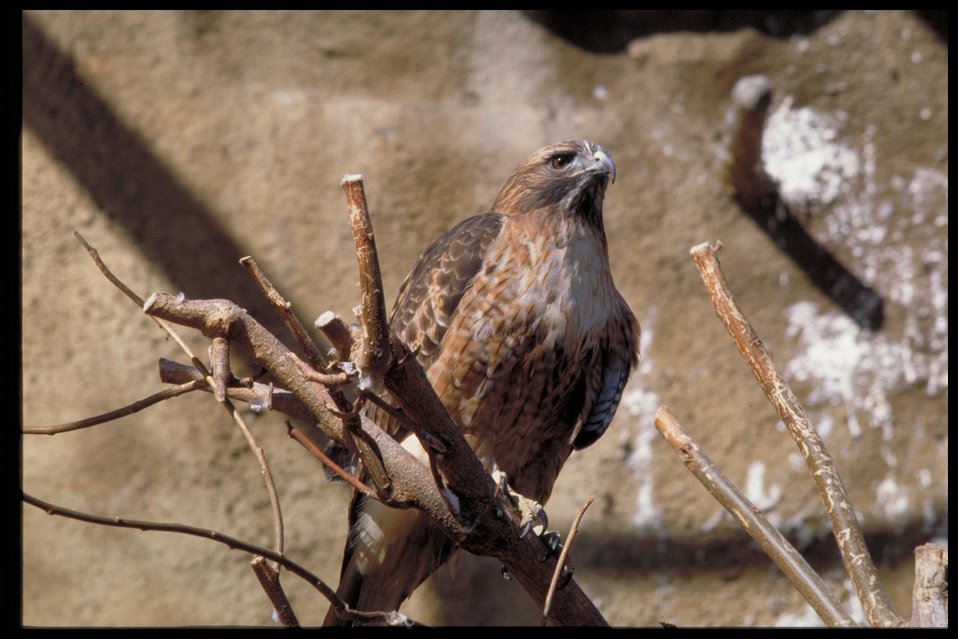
Red-Tailed Hawk Birds of Prey National Conservation Area BOP Owyhee Field Office LSRD Lower Snake River District